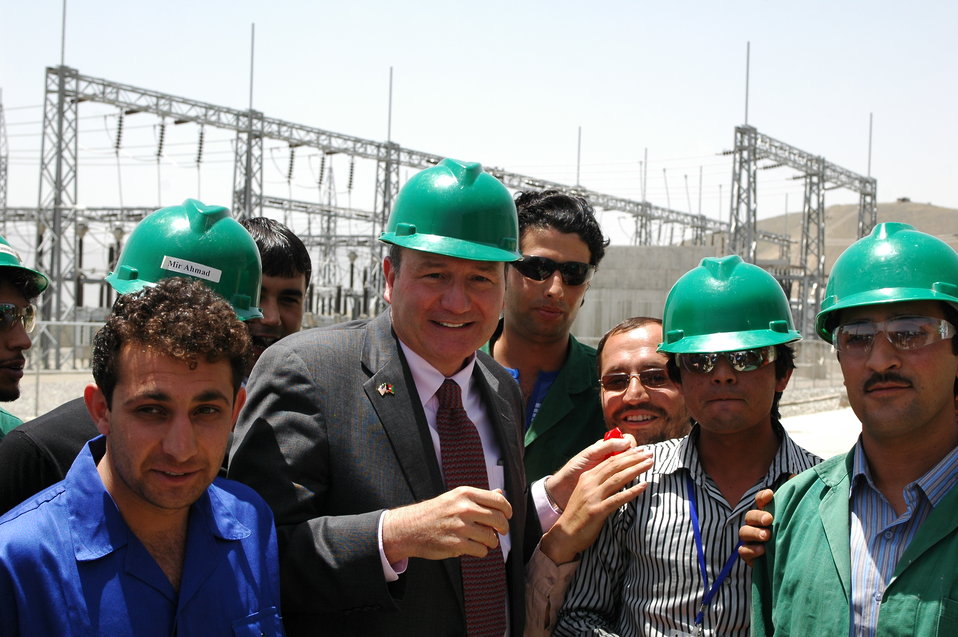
105 MW Tarakhil Power Plant Handover